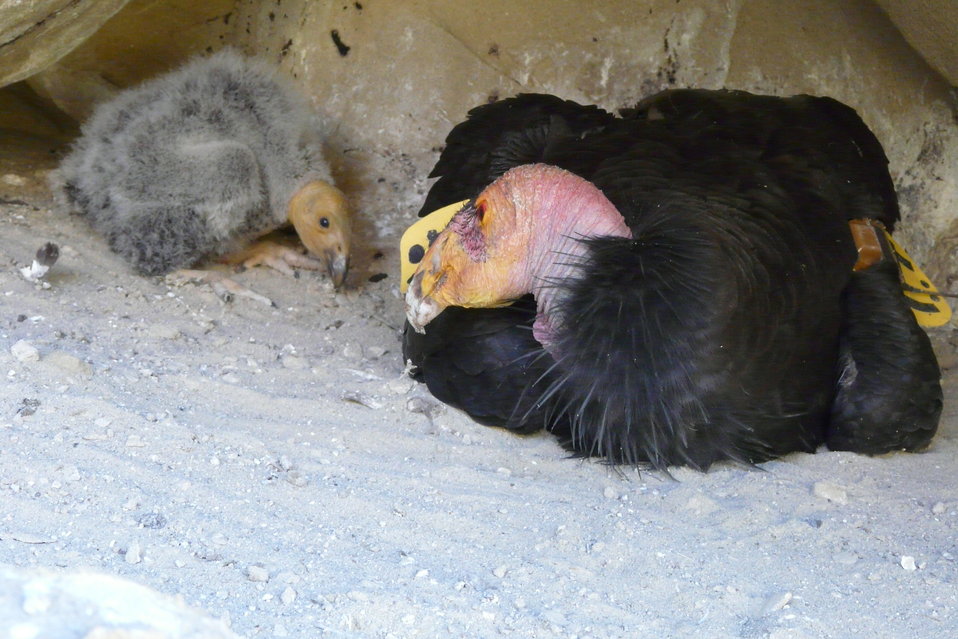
30-day old California condor chick

A California condor sits next to its 30-day old chick in the nest cave